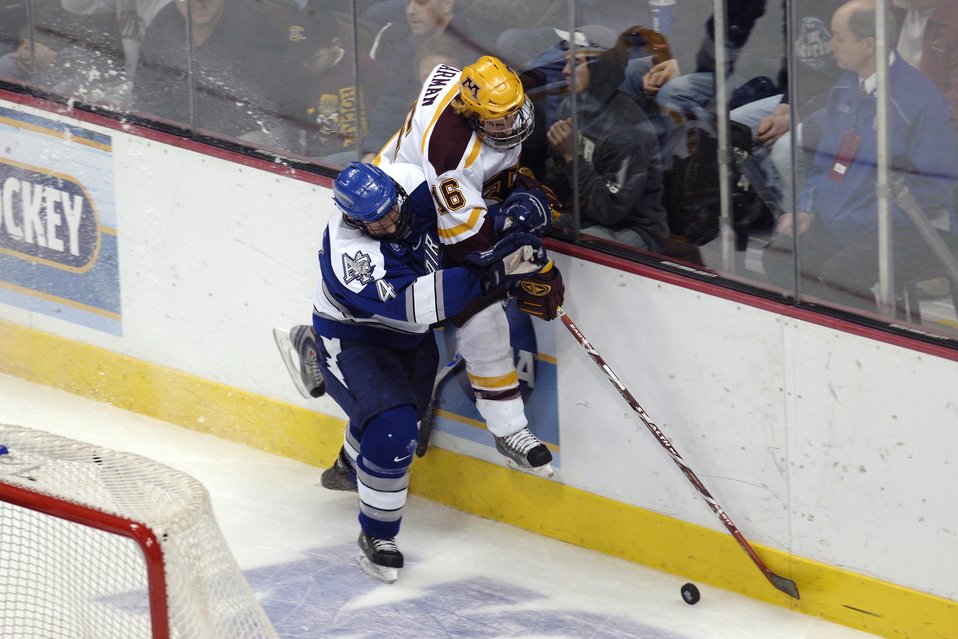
Gophers ground Falcons season during third period rally

Falcon defenseman Greg Flynn finishes his check on Minnesota's Mike Carman during the NCAA West Regional March 24 at the Pepsi Center. Flynn played against his younger brother, Ryan, a right wing, in the game won by the Golden Gophers 4-3.